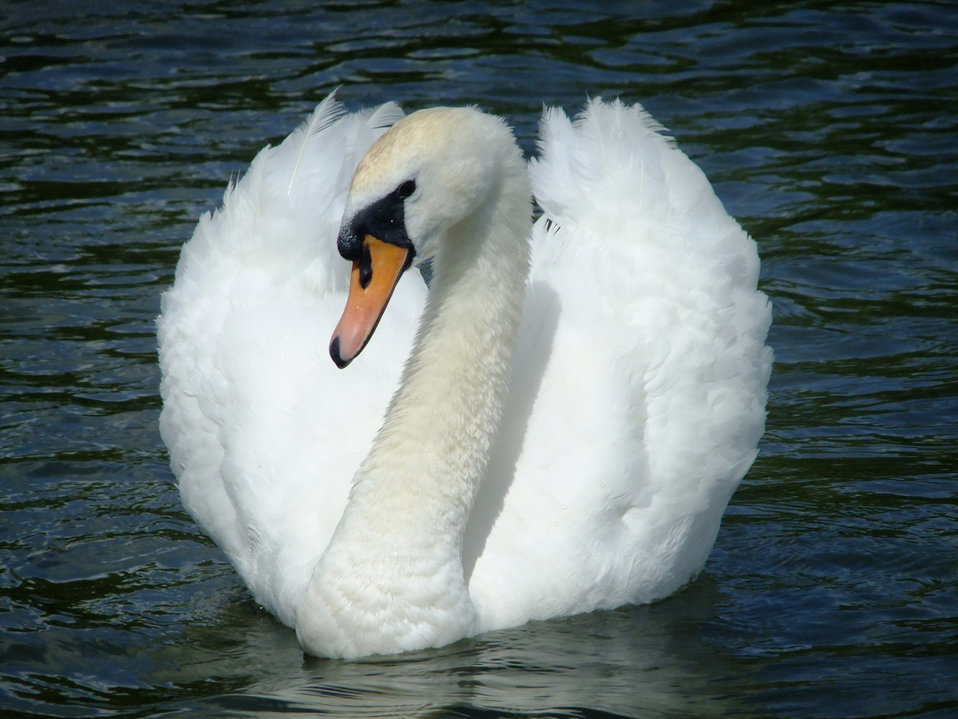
Beautiful swan

Swan on river great ouse uk.